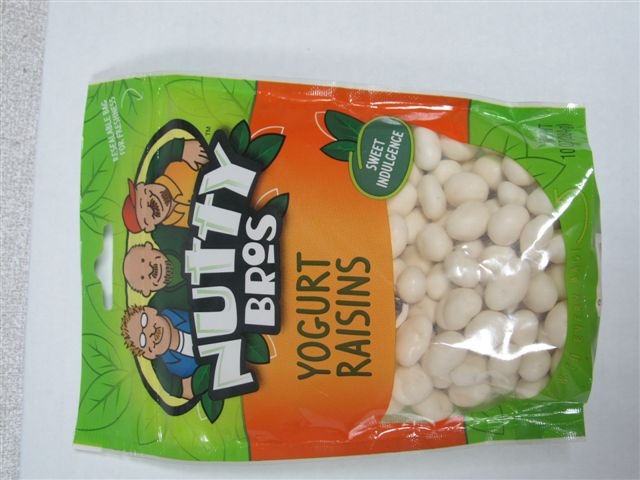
RECALLED - Yogurt Raisins and Granola Mix

December 22, 2011 - Eillien's Candies, Inc. Issues a Voluntary Recall of Select Candy Items Due to Possible Health Risk.